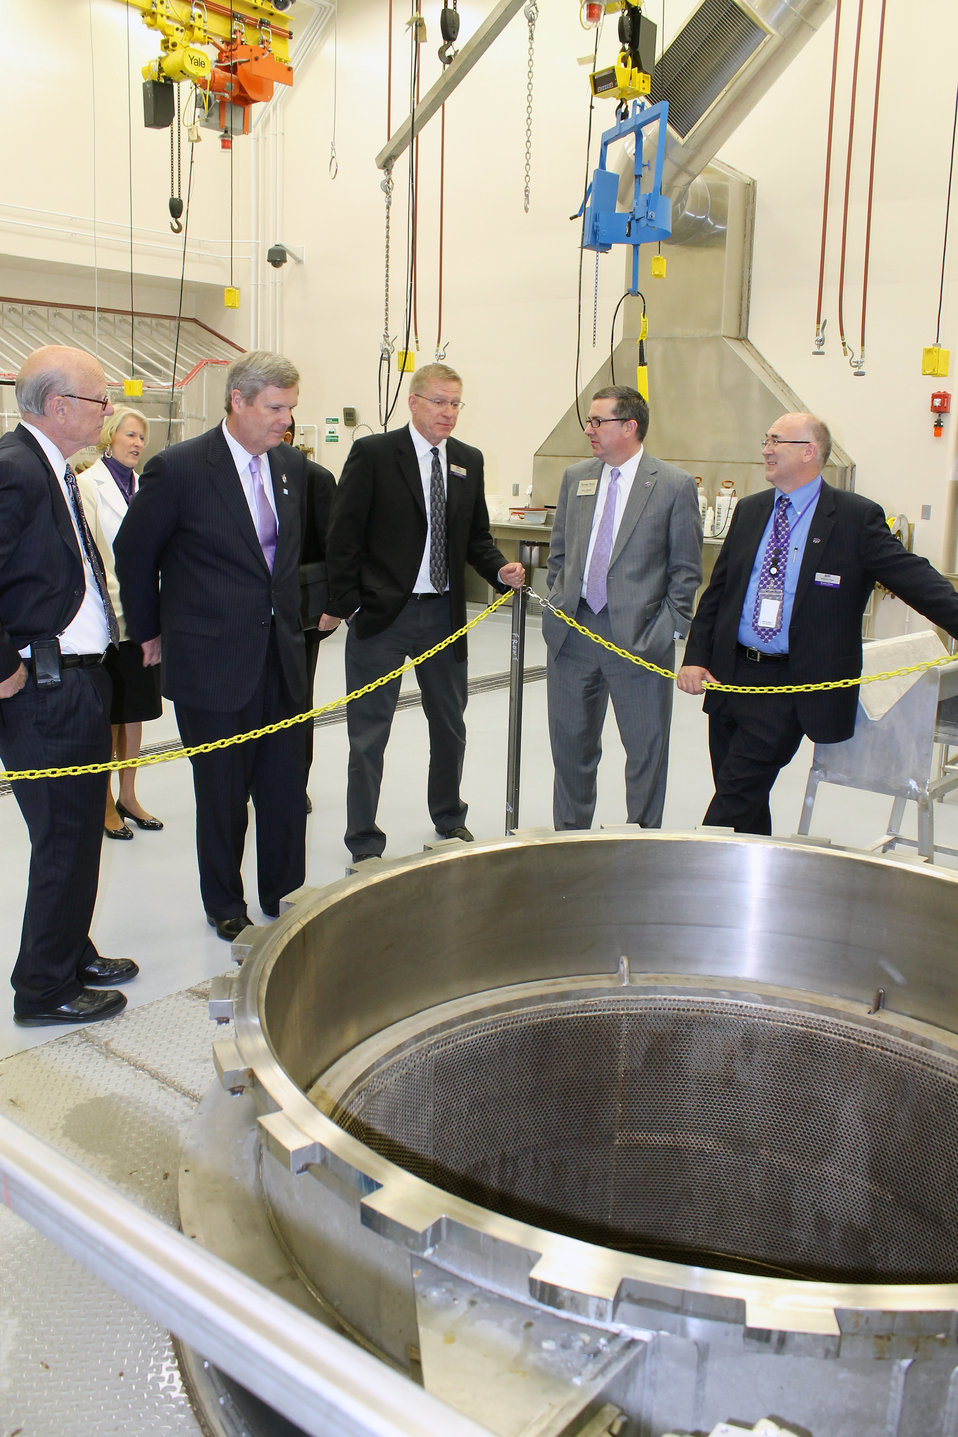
Agriculture Secretary Tom Vilsack visits the Biosecurity Research Institute inside of Pat Roberts Hall at Kansas State University, KS on Tuesday, April 10, 2012. (L to R Senator Pat Roberts, (KS), Agriculture Secretary Tom Vilsack, Director of Pat Roberts Hall Scott Rusk, President of Kansas State University Dr. Kirk Schulz, and Research Director of the Biosecurity Research Institute Dr. Stephen Higgs) The tub they are looking at is an alkaline hydrolysis disposal system, at Kansas State University, in Manhattan, KS.